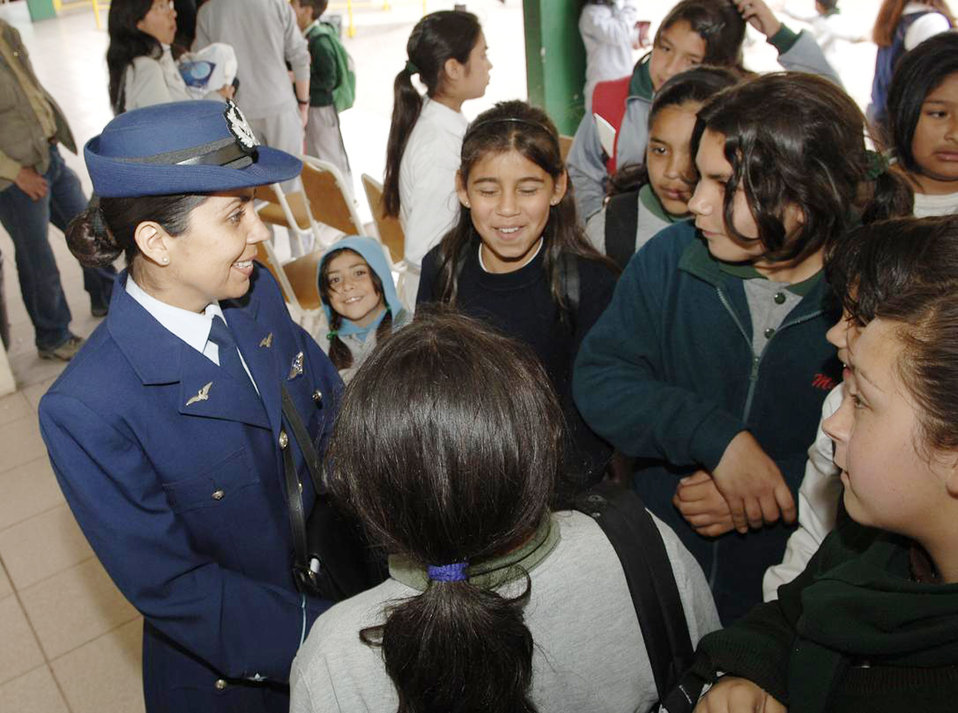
U.S., Chilean airmen visit school

Chilean air force airman Patricia Vidal talks to students of Colegio Macaya during a joint U.S./Chilean air force visit Oct. 27, 2009, in Alto Hospicia, Chile.